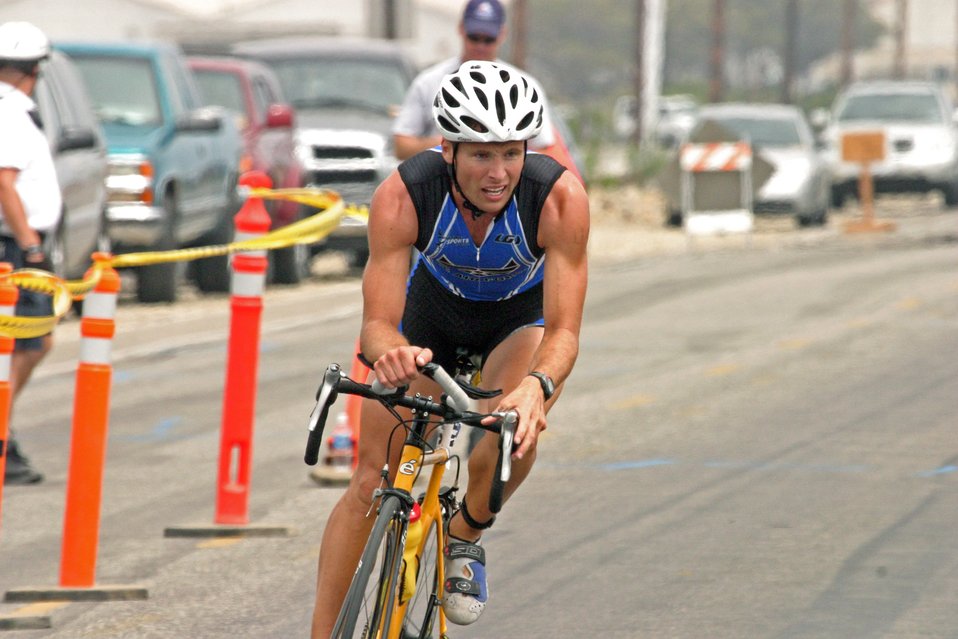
2007 Armed Forces Triathlon Championship

Capt. James Bales pours it on during the 2007 Armed Forces Triathlon Championship at Naval Base Ventura County-Point Mugu, Calif., July 28. Captain Bales, from Lackland Air Force Base, Texas, was the top Air Force men's finisher and came in fourth overall in the men's division.